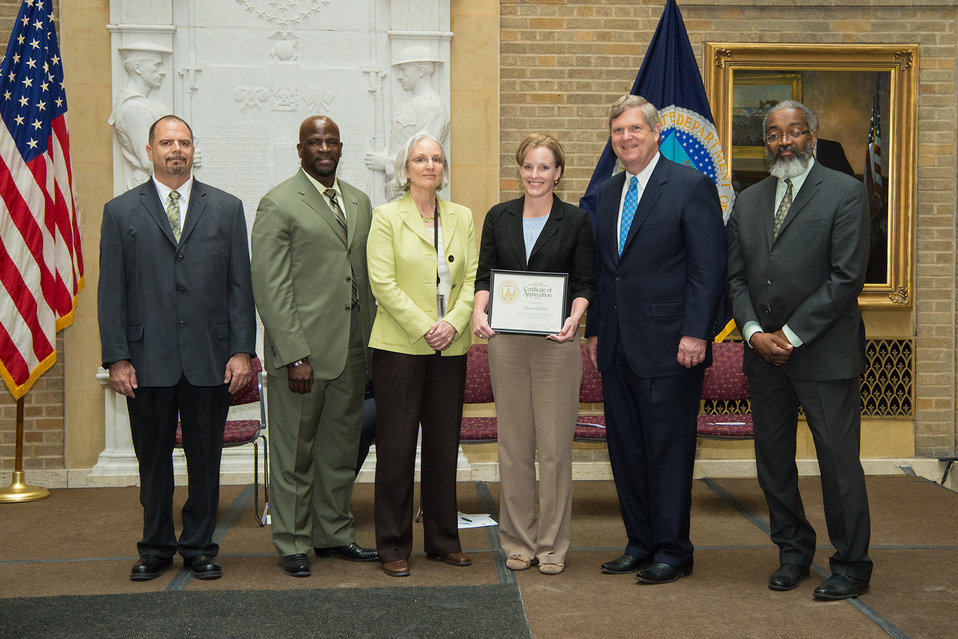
U.S. Department of Agriculture (USDA) Natural Resources Conservation Service (NRCS) Texas State Technology Specialist Lori Ziehr accepts the Unsung Hero Award for USDA NRCS Tracie Kelley from USDA’s Organization of Professional Employees (OPEDA) President Louis Iacoletti, West Region Regional Conservationist Aston Boozer, USDA Natural Resources and Environment (NRE) Deputy Under Secretary Ann Mills, Agriculture Secretary Tom Vilsack and USDA Assistant Secretary for Administration Dr. Gregory Parham at USDA in Washington, D.C. on Wednesday, May 7, 2014.